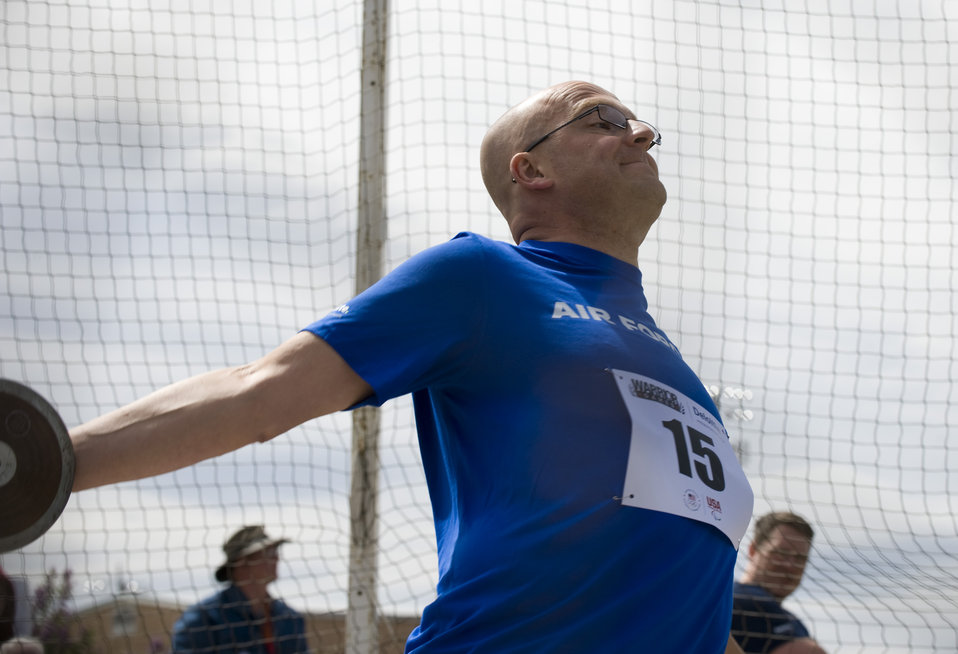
Warrior Games Track and Field

Air Force athlete Michael Rushton throws a discus during the track and field competition May 17, 2011, at the 2011 Warrior Games in Colorado Springs, Colo. The track and field events kicked off the games, which continue throughout the week.